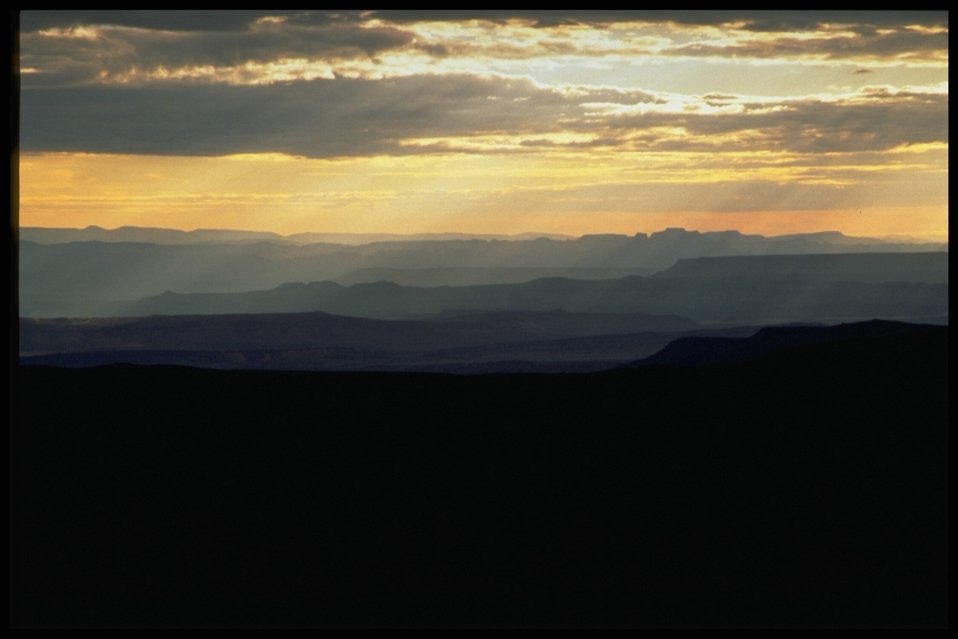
A sunset at the Parashant National Monument. WIth a bueatiful canyon view.